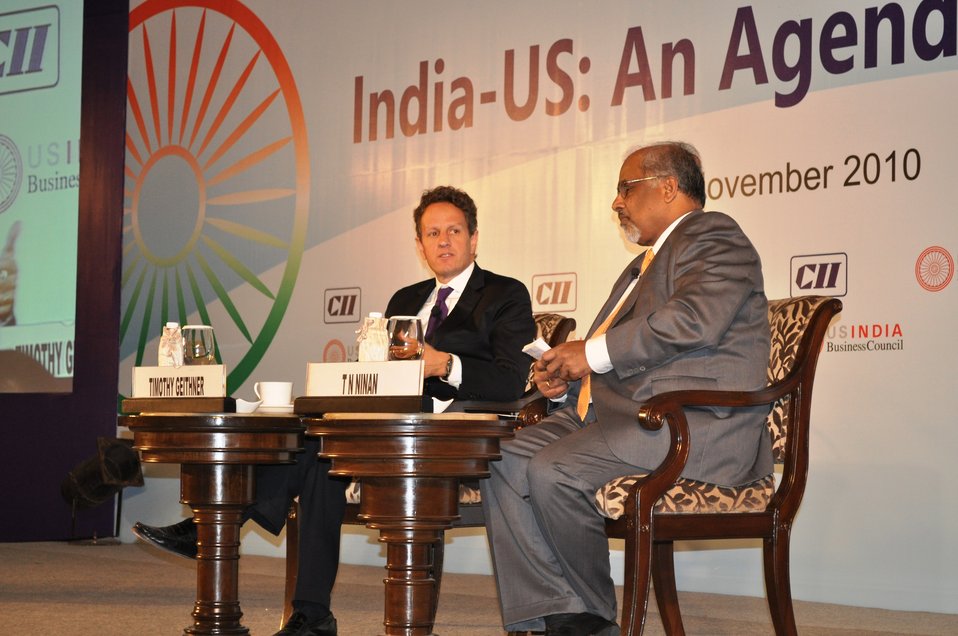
Geithner visit to Asia, November 4-12, 2010

On November 8, 2010, Secretary Geithner participated in a moderated discussion at the Confederation of Indian Industry-U.S.-India Business Council (CII-USIBC) Business Conference in Delhi, India.